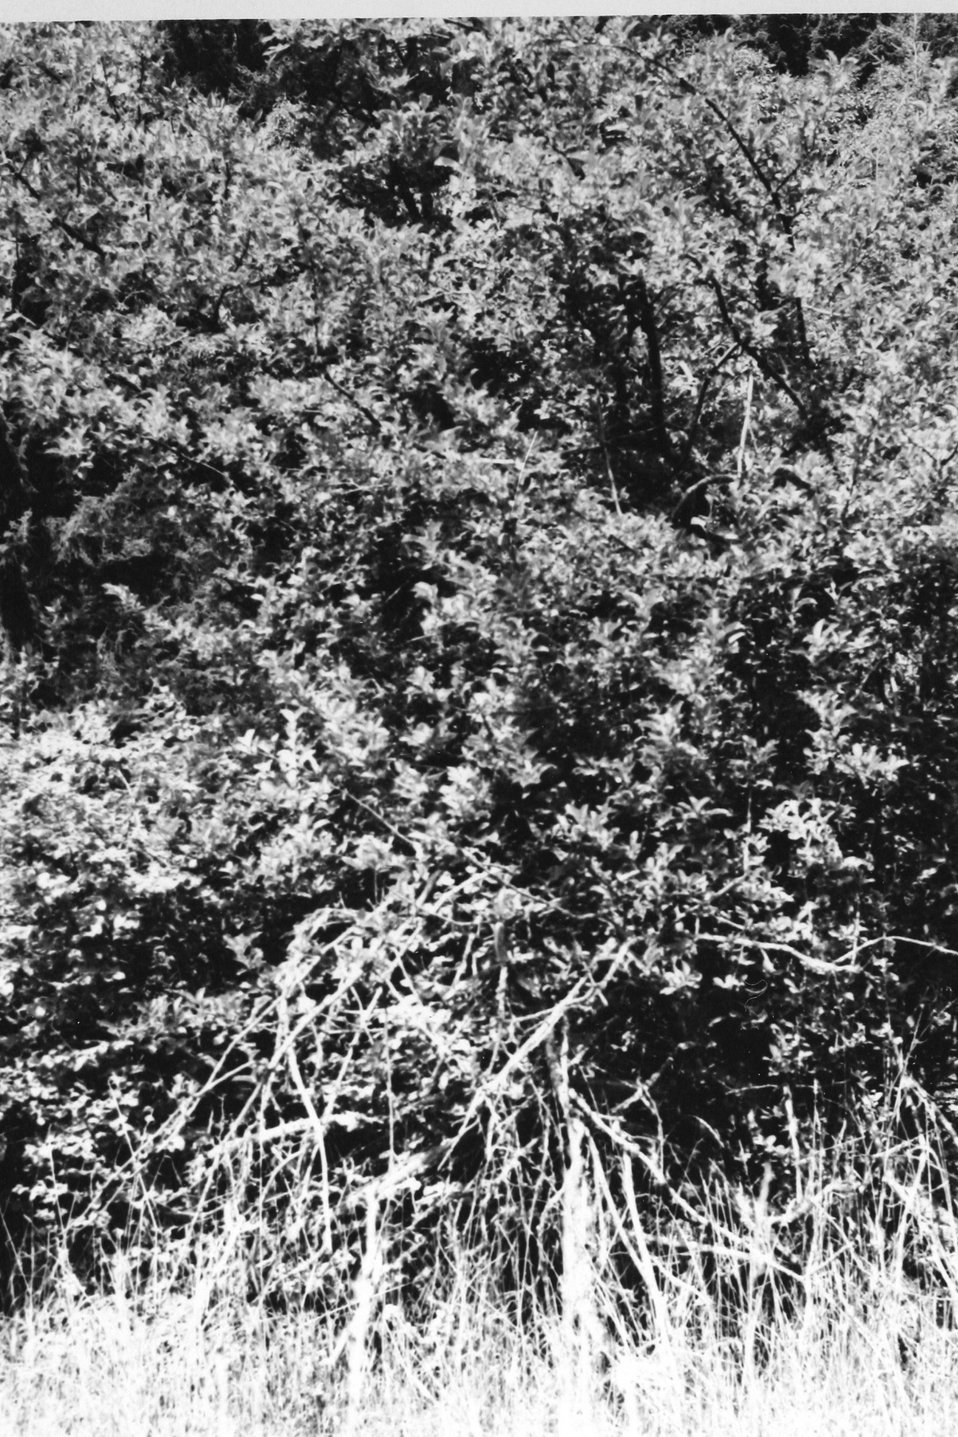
Old fruit trees a the home site in Big Meadows.